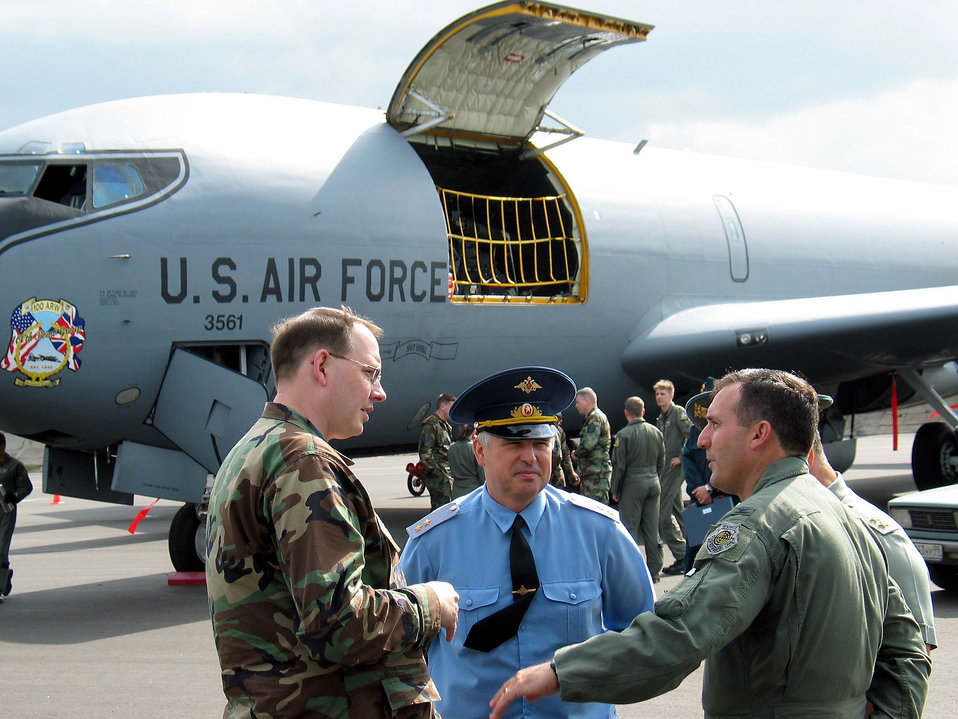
Welcome to Russia

ZHUKOVSKY, Russia -- Russian air force deputy commander, Gen. Lt. Alexander Nikolaevich Zelin (center), greets Col. Stephen Mueller (right) and Maj. Kevin Thrash at Zhukovsky airfield for the 6th Moscow Aviation and Space Show. Five U.S. Air Force aircraft are on display at the event, a first for the U.S. military. Mueller is the 52nd Fighter Wing commander from Spangdahlem Air Base, Germany, and the U.S. military cadre commander at the show. Thrash is the Russia desk officer for U.S. Air Forces in Europe's plans and programs directorate.